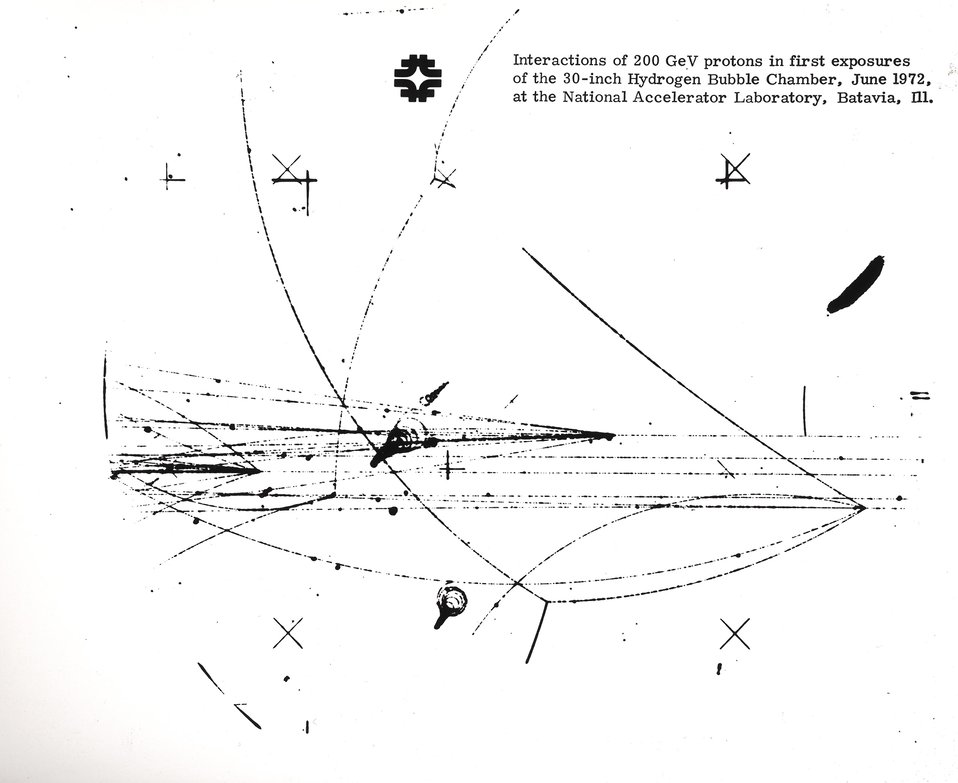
Interactions of 200 GeV protons in first exposures of the 30-inch Hydrogen Bubble Chamber June 1972 at NAL.
c.1972